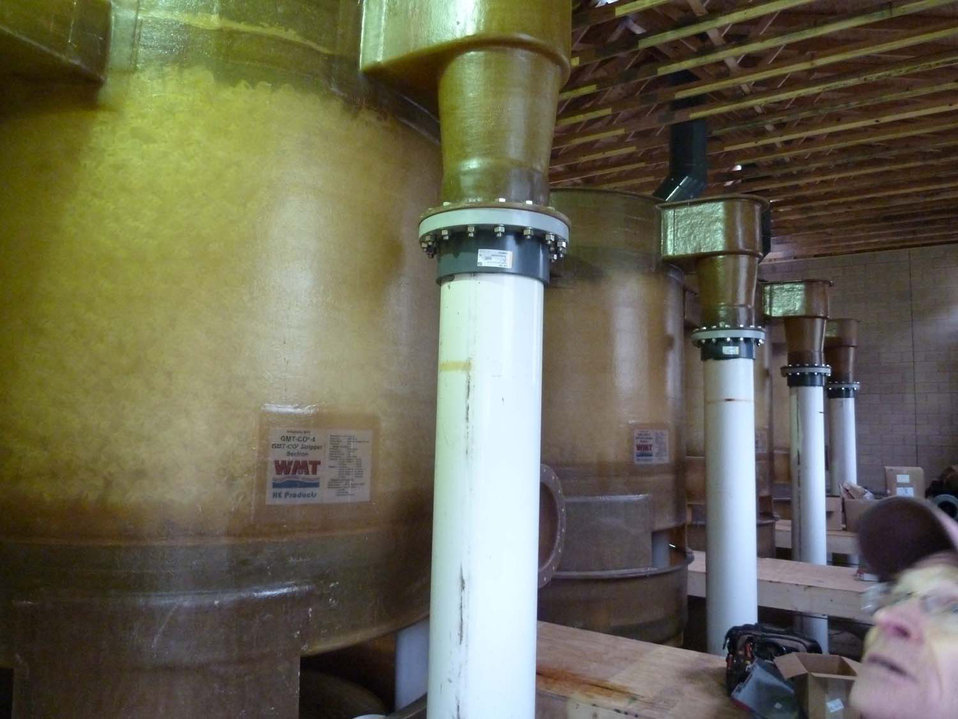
New aeration towers

Allegheny's well water is supersaturated with nitrogen and must pass through these four aeration towers before it can be used for fish production.